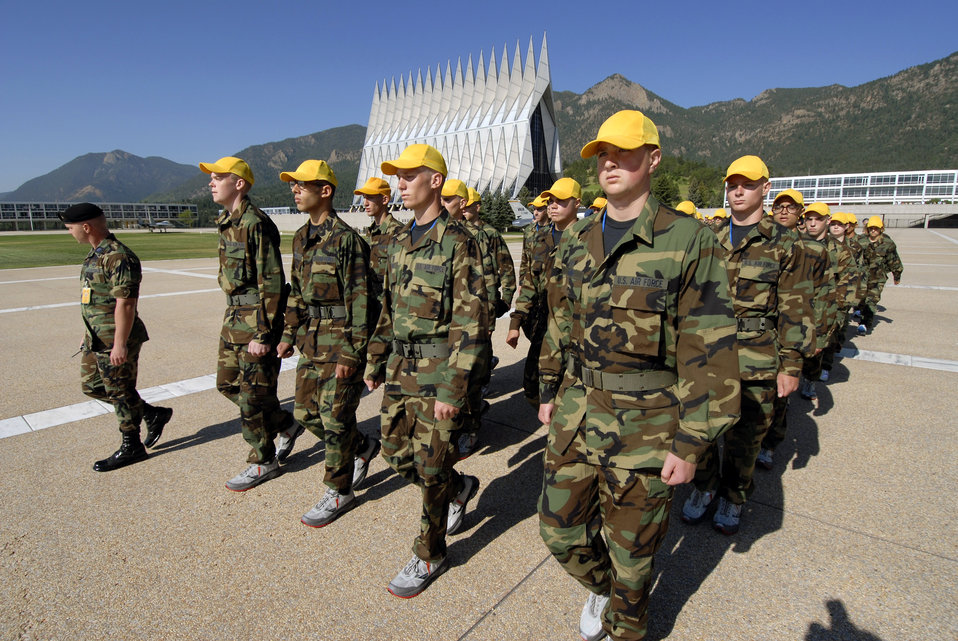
I, do solemnly swear ...

Basic cadet trainees march off the Terrazzo after the swearing-in ceremony June 29 at the U.S. Air Force Academy in Colorado. This ceremony marks the beginning of the first half of basic cadet training, commonly known as